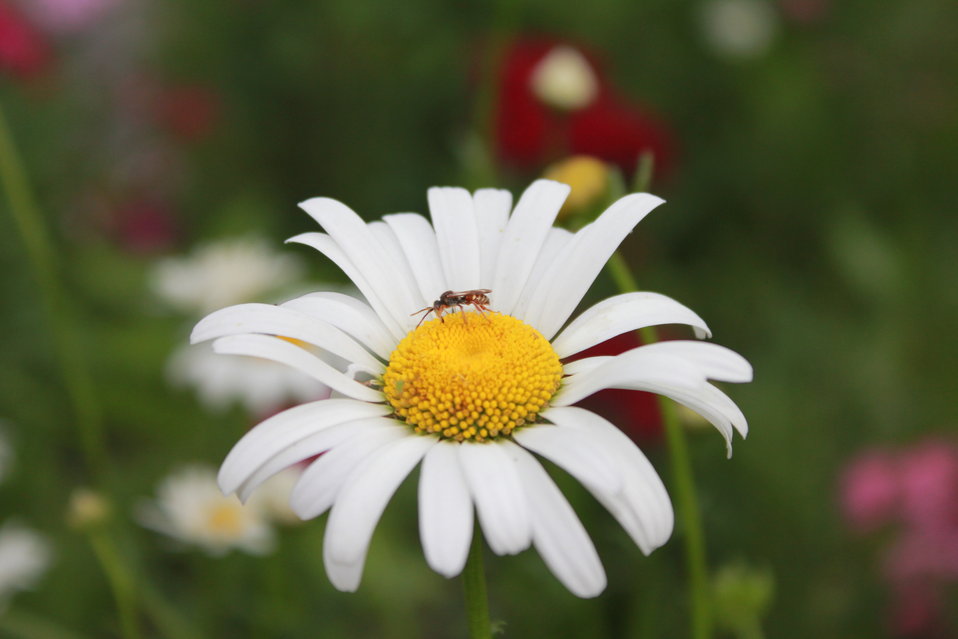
Pollinators in Hadley, MA.